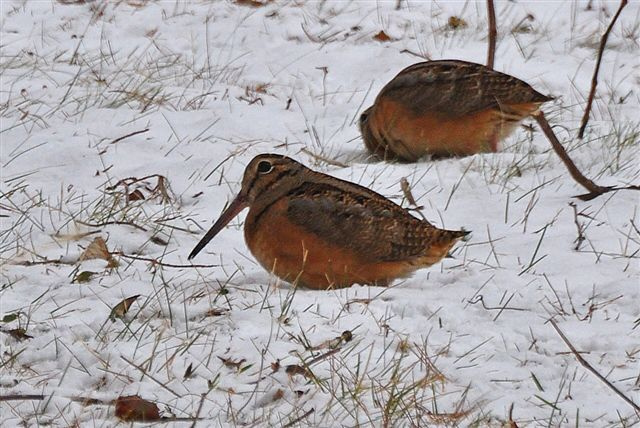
woodcocks have begun peenting ...

at Muscatatuck National Wildlife Refuge in IN, where the males perform their acrobatic courtship displays around dawn and dusk just south of the refuge office.
This photo was taken in 2011 at Ninigret National Wildlife Refuge, RI